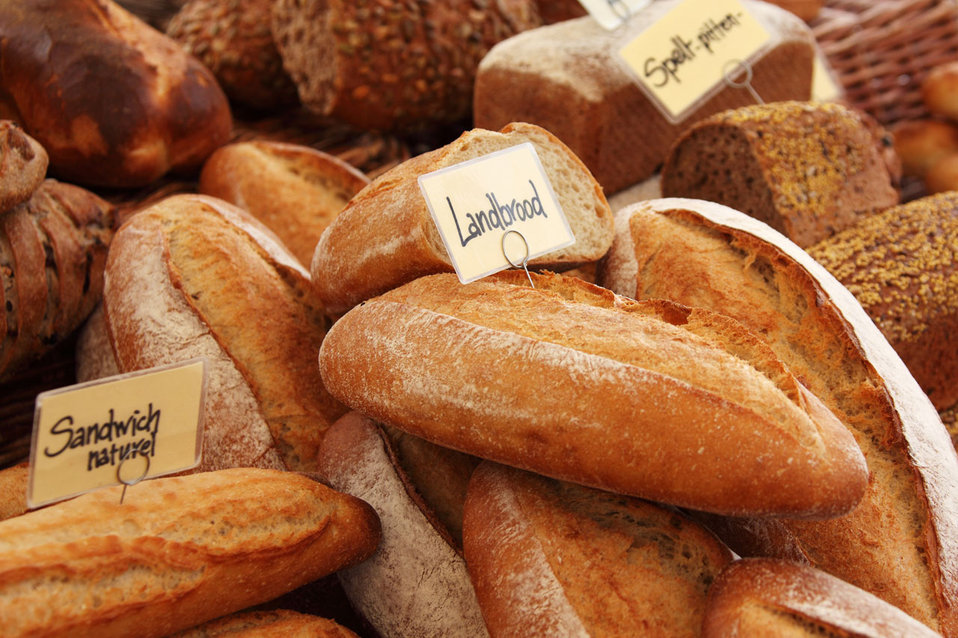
Fresh bread on local market.